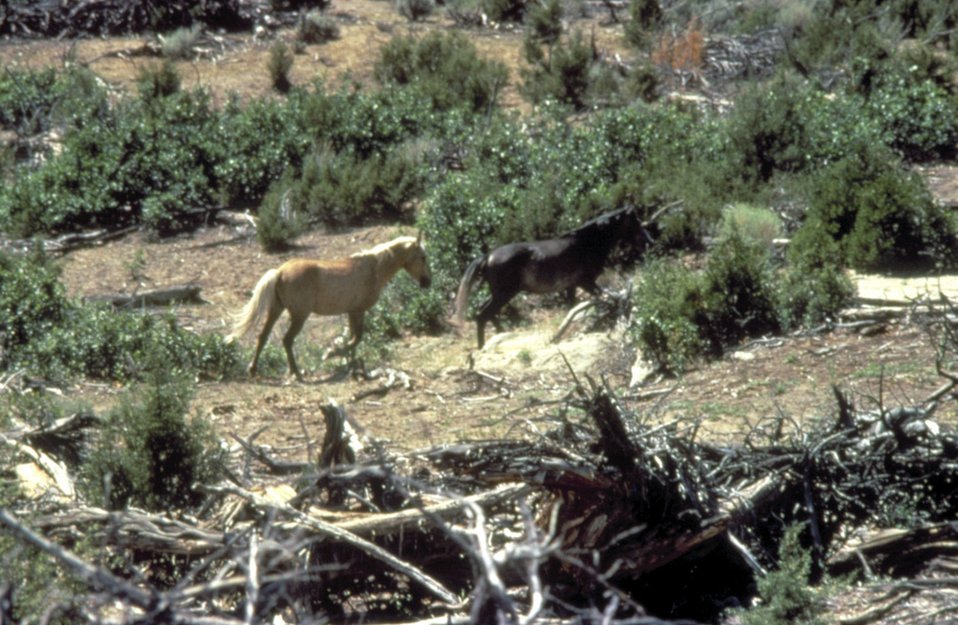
Wild Horses